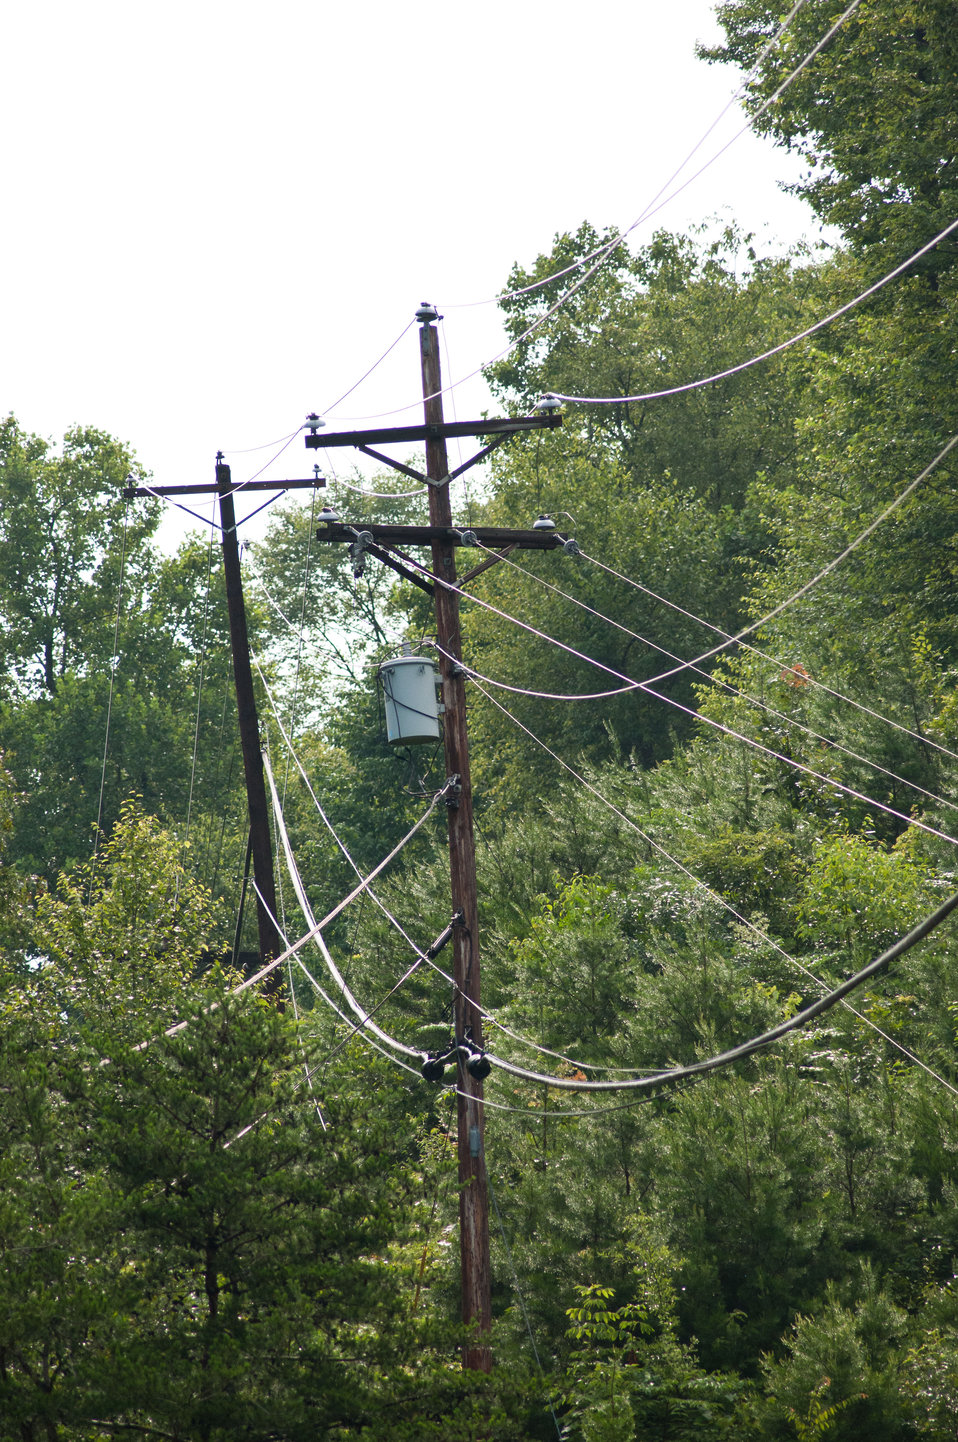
Power and communications lines between Lexington and Pikeville, KY, on Tuesday July 12, 2011. This is the Eastern Kentucky region of the Appalachian Mountains.